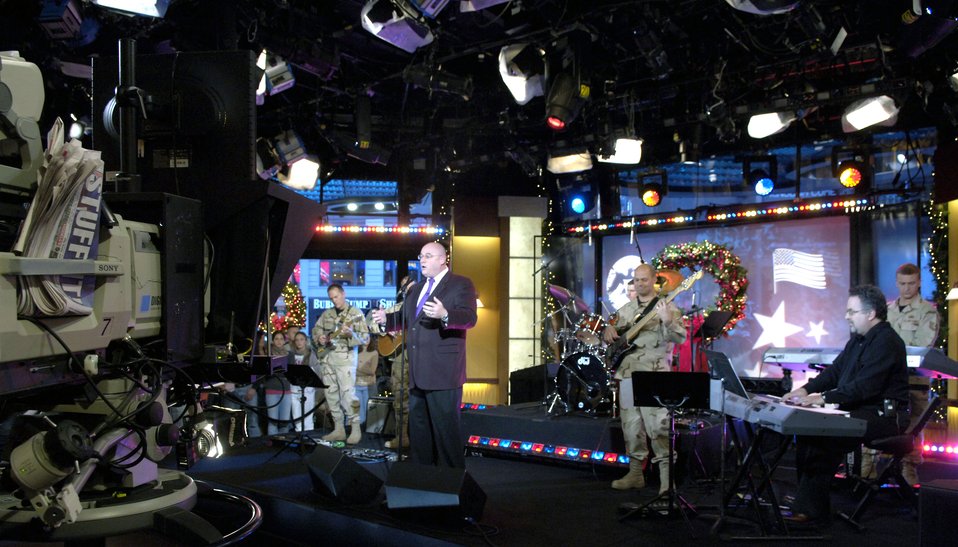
Good Morning America

Irish Tenor Ronon Tynan sings with the U.S. Air Force Academy Band,